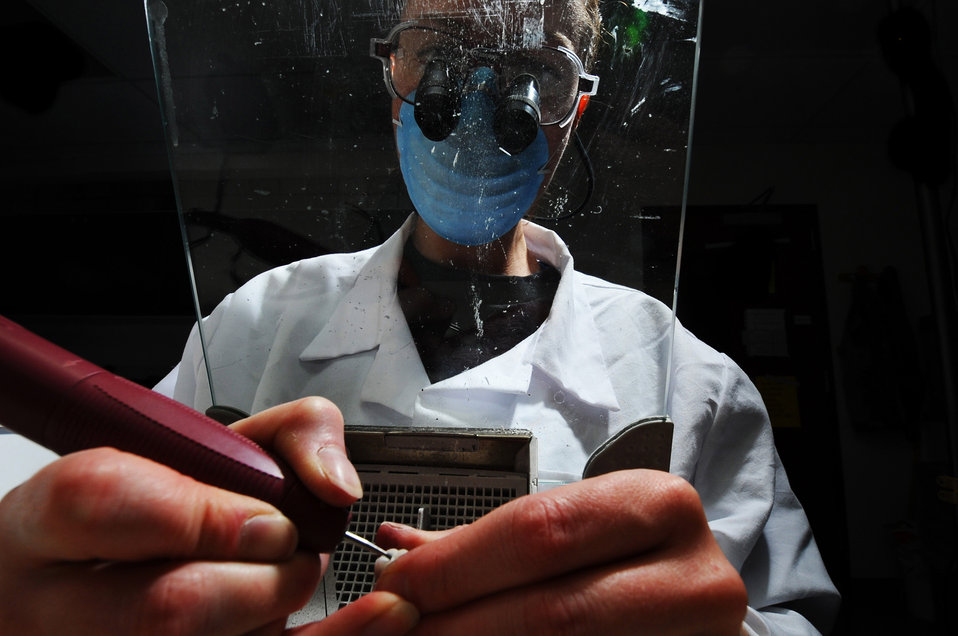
Crown me

Staff Sgt. Amy Cadavero looks through magnifying goggles as she shapes a porcelain crown using a dental drill with a diamond bur drill bit Sept. 9 at Eielson Air Force Base, Alaska. Once Sergeant Cadavero receives the impressions made from a patient's teeth, she will then make it into a cast mold to start shaping the crown so it will fit comfortably in a patient's mouth. This process can take up to a week to finish. She is a dental lab technician assigned to the 354th Medical Operations Squadron